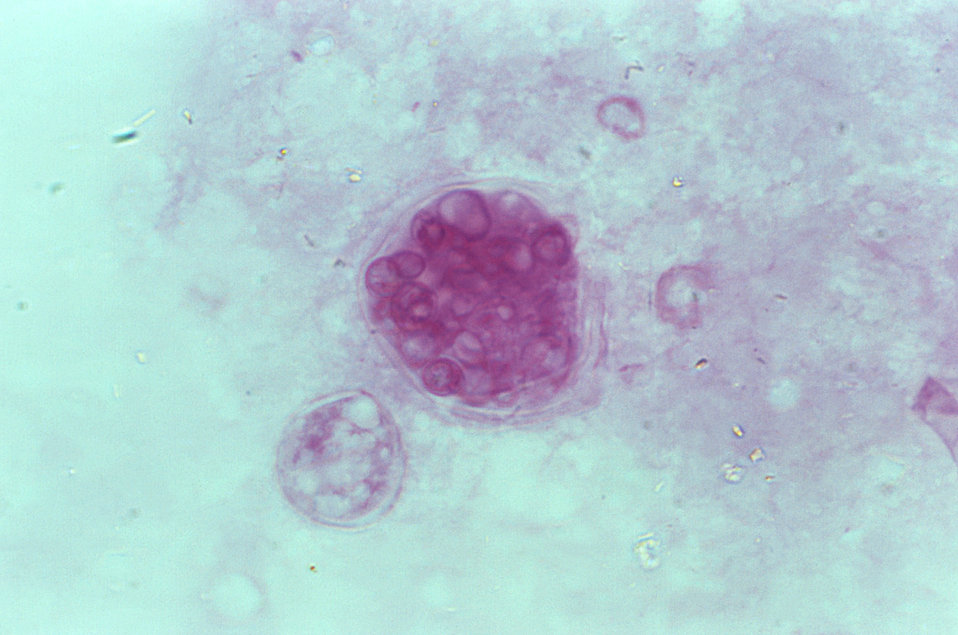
This photomicrograph revealed some of the histopathologic characteristics found within a pus specimen, which was prepared using periodic acid-Schiff (PAS), and which had been harvested from a skin lesion in a case of cutaneous coccidioidomycosis. In this particular specimen you'll note the chlamydospore, or mature spherule of a Coccidioides immitis fungal organism. As the reproductive structure of this, as well as other types of fungi, this spherule is also known as a chlamydoconidium, and contains the organism's endospores.